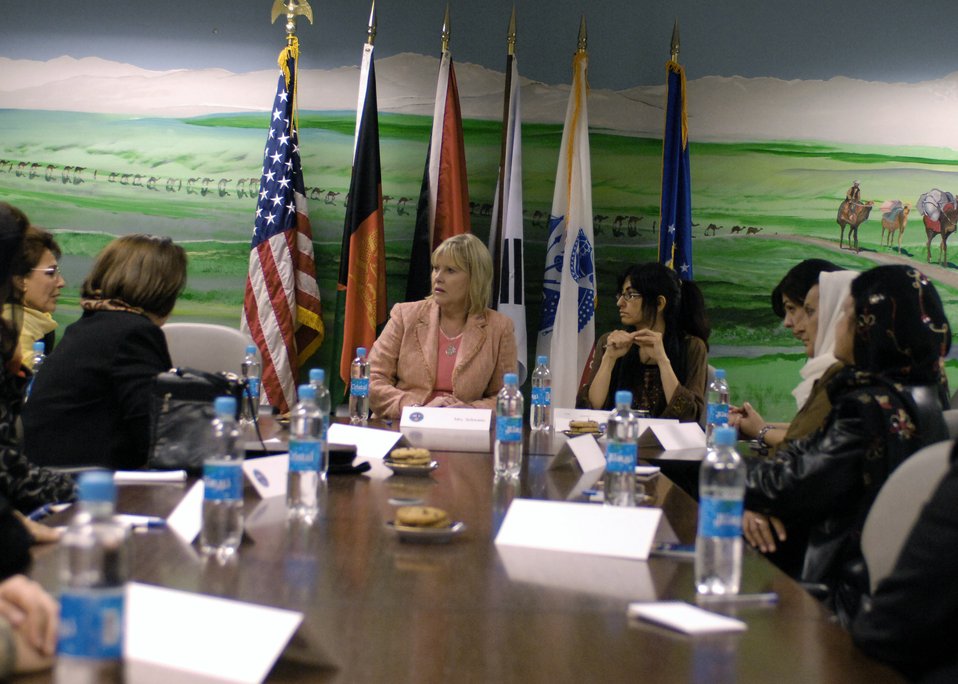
Bagram PRT host women's affair meeting

Prominent Afghan women from Kabul, Kapisa and Parwan provinces meet at Bagram Air Base, Afghanistan, to discuss women's affairs in Afghanistan with Suzie Schwartz, wife of Gen. Norton Schwartz, U.S. Transportation Command commander.